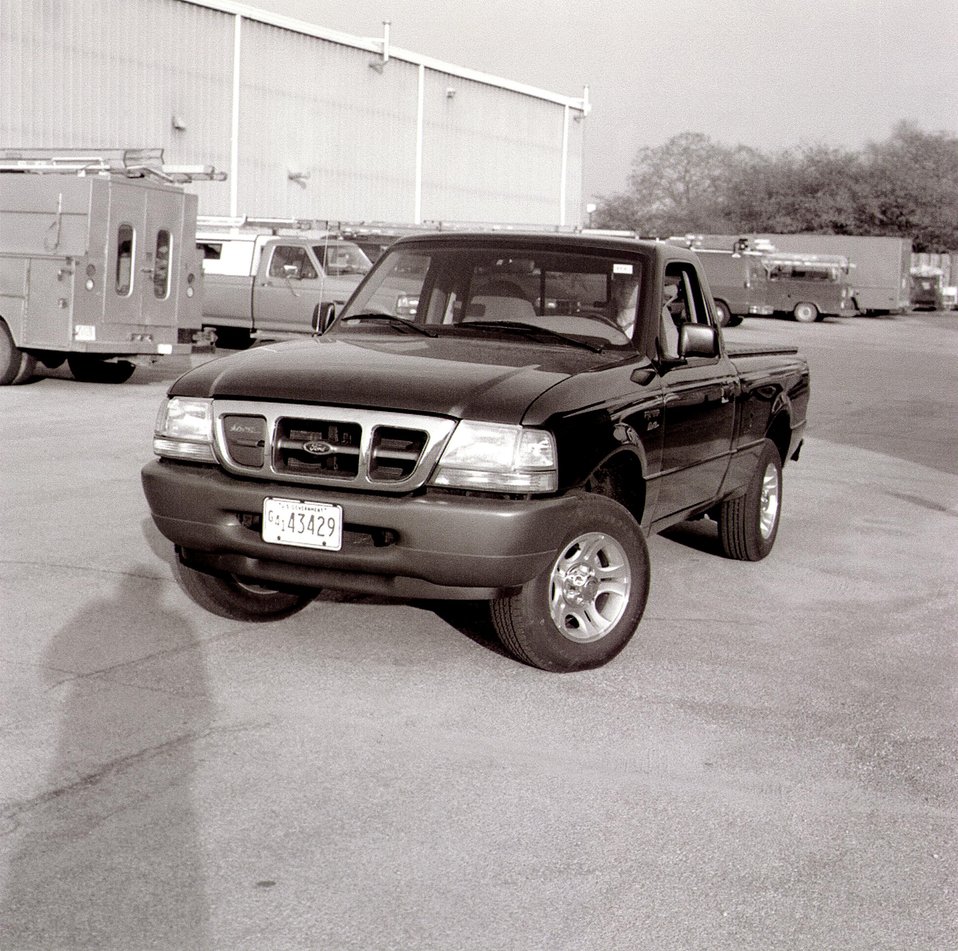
AN ELECTRIC RANGER ZERO EMISSION VEHICLE PARKED AT FERMILAB.

IN ORDER TO CUT DOWN ON THE USE OF PETROLEUM BASED FUELS, FERMILAB IS DEVELOPING A FLEET OF VEHICLES WHICH INCLUDES ELECTRIC VEHICLES AND ALTERNATIVE FUEL VEHICLES. SHOWN IS AN ELECTRIC FORD RANGER ZERO EMISSION VEHICLE.